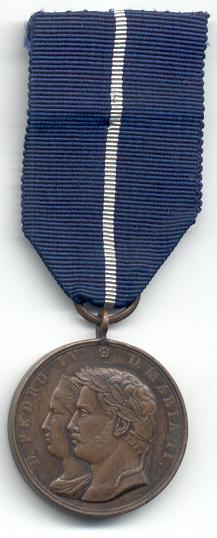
Português: Fotografia pessoal.